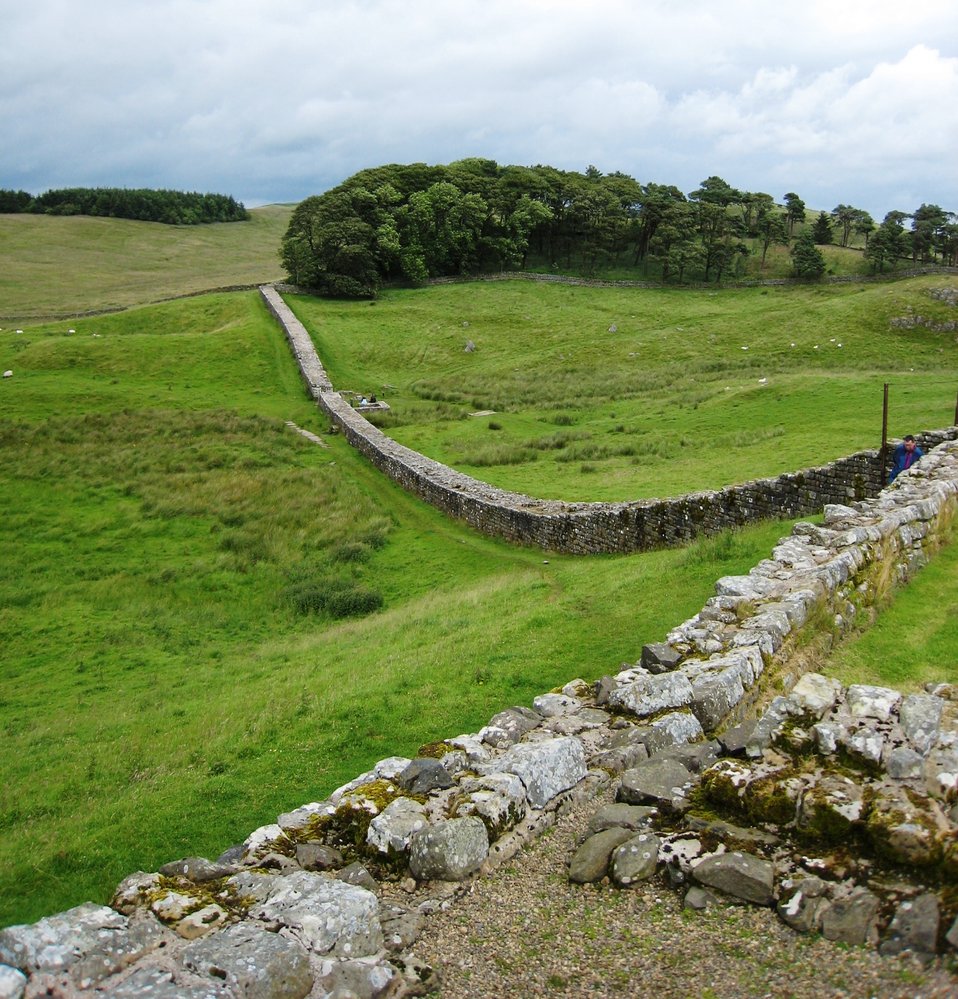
A stretch of en:Hadrian's Wall viewed from en:Vercovicium near en:Housesteads in en:Northumberland, Date: 2007 Deutsch: Blick vom Ostturm des Nordtores am Kastell Housesteads auf den nach Osten verlaufenden Hadrianswall. Aufgenommen 2007